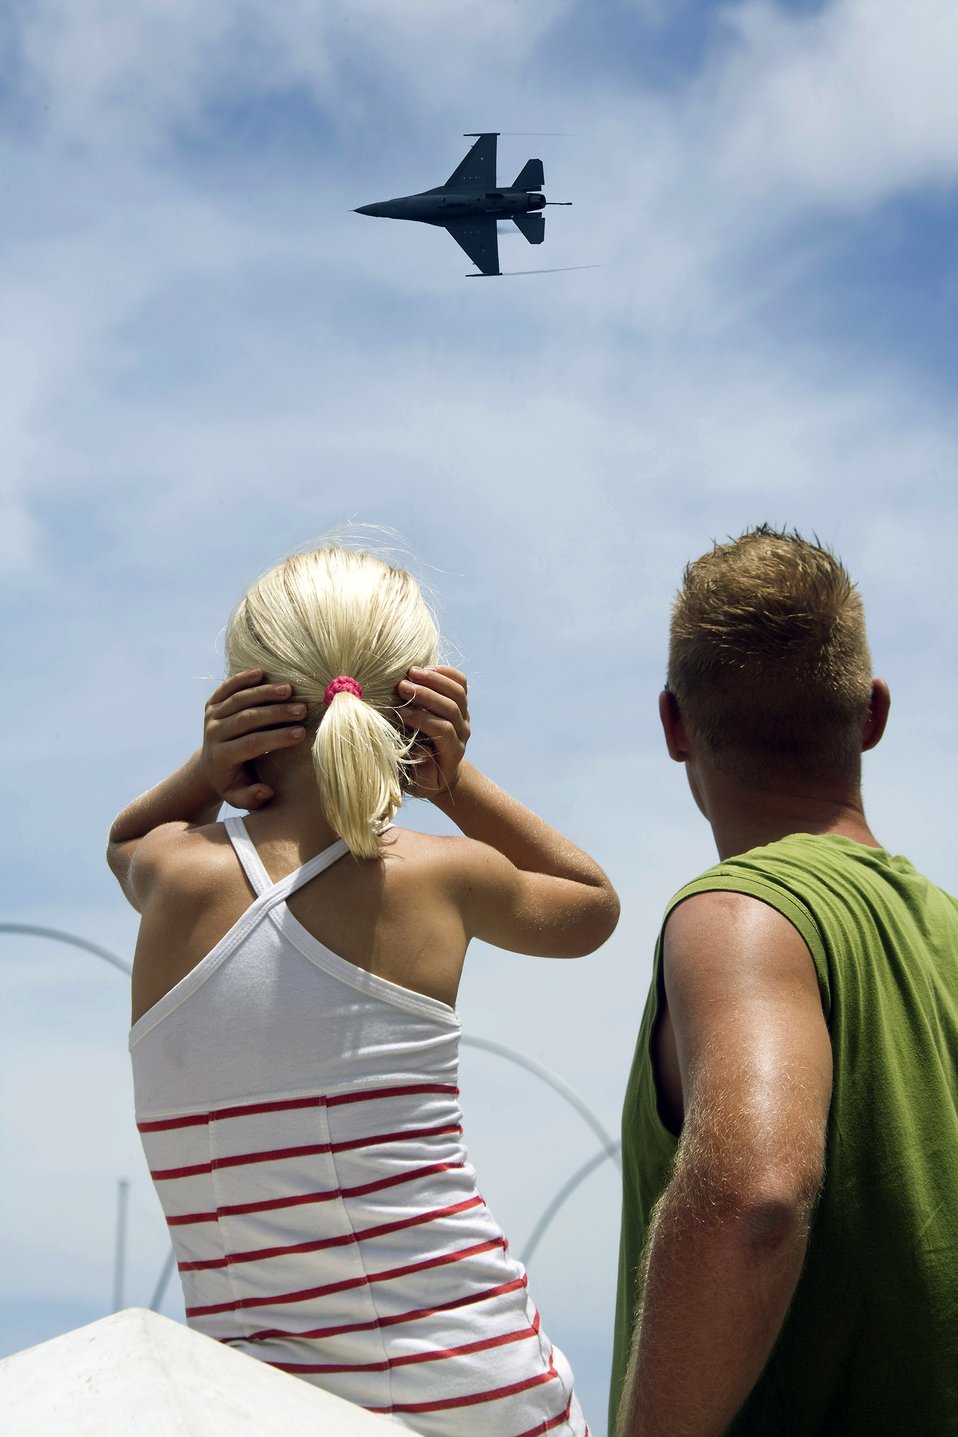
Dutch Navy Days

A local child covers her ears as an F-16 Fighting Falcon, flown by Capt. George Clifford of the Viper East F-16 demonstration team, flies over Curacao, Netherlands Antilles. The Viper East team, from Shaw Air Force Base, S.C., joined officials from Air Forces Southern headquarters at Davis-Monthan AFB, Ariz., to augment